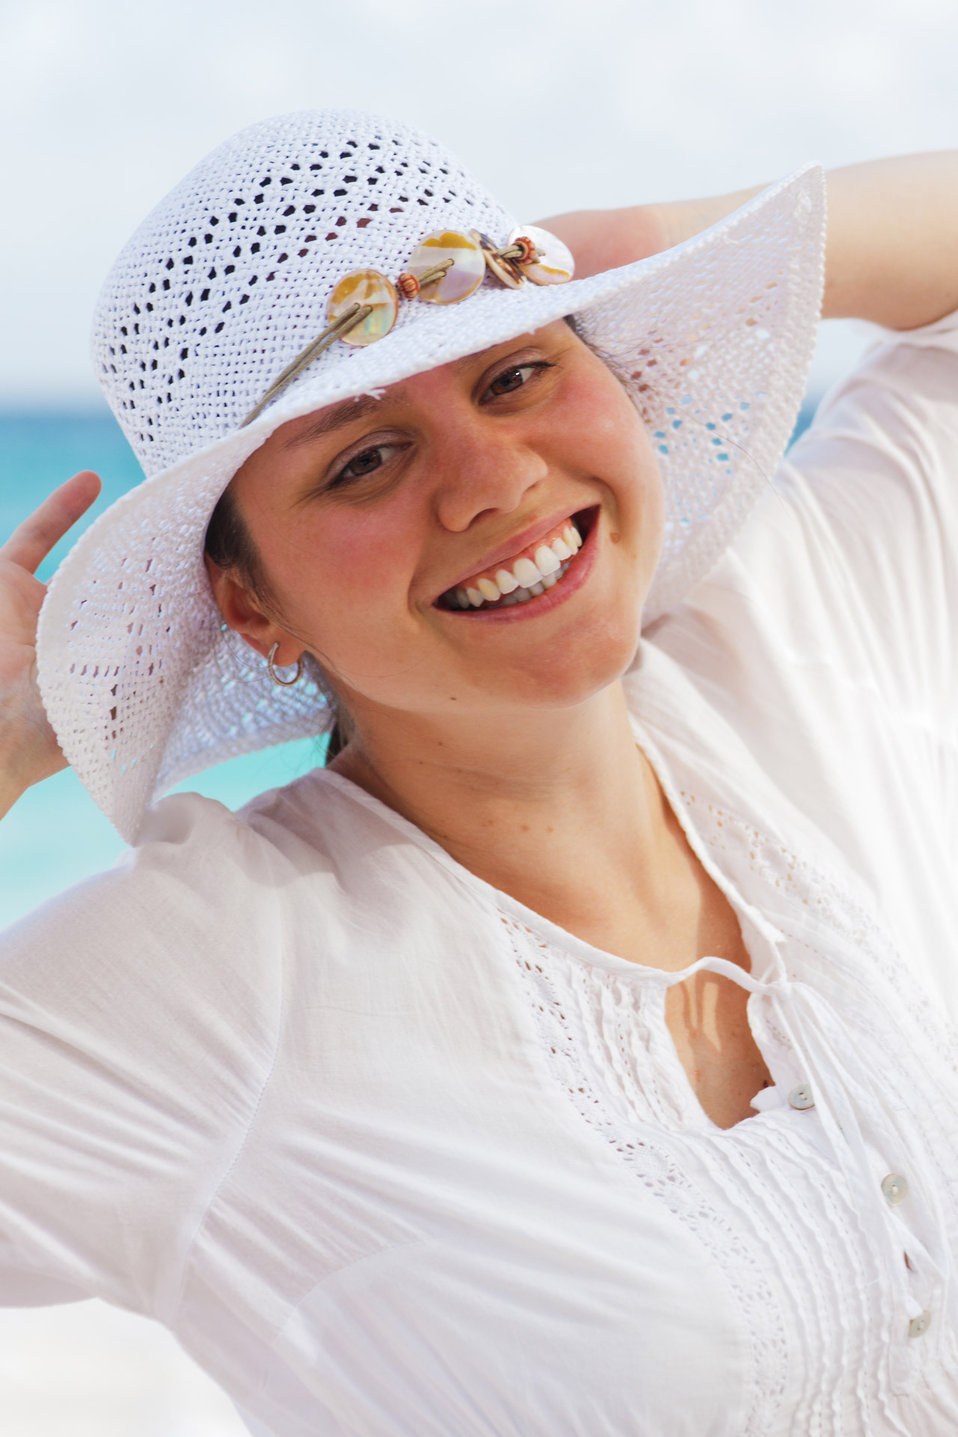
Woman with a hat on beach

Young woman with a white hat on a beach in caribbean.